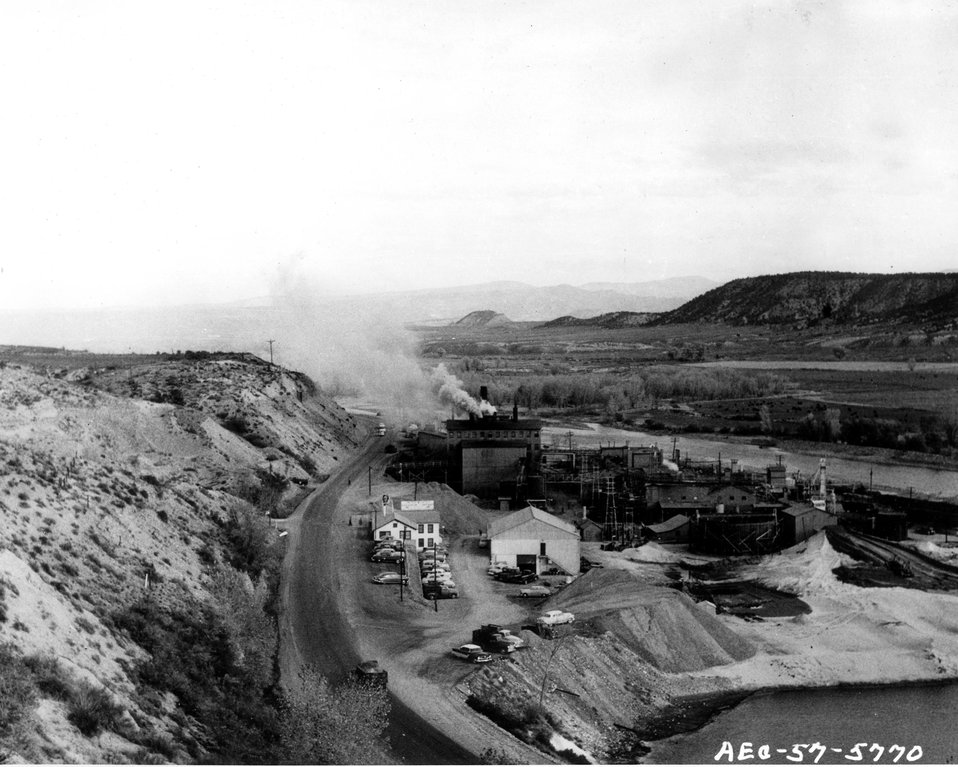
Uranium processing mill owned and operated by Union Carbide Nuclear Company at Rifle, Colorado. c. 1957